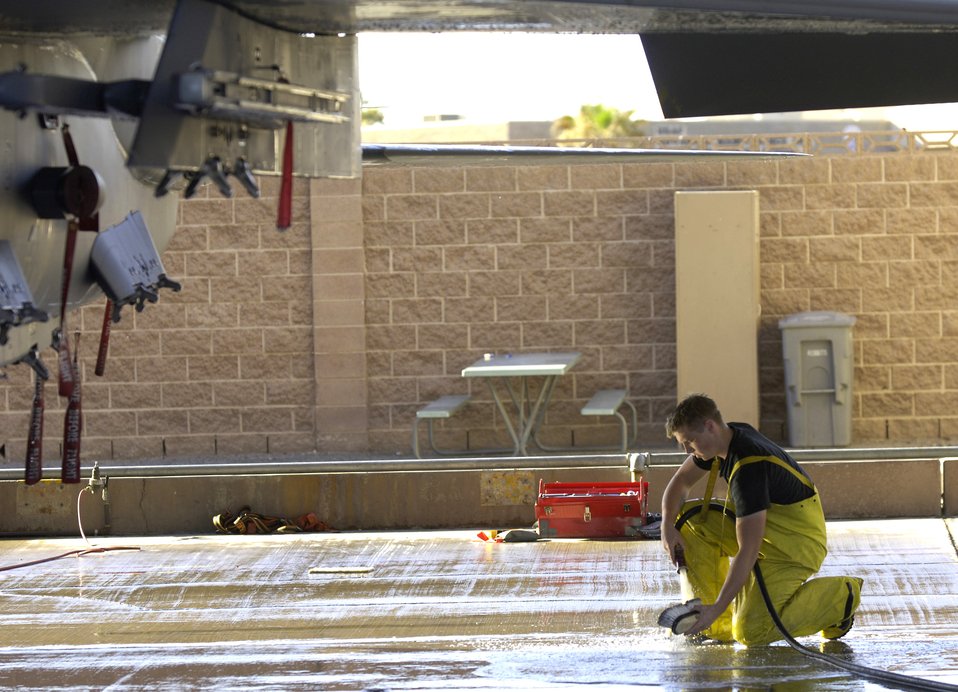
A Strike Eagle gets a bath

Airman 1st Class Dylan Edson rinses his brush while washing an F-15E Strike Eagle during a 120-day periodic cleaning March 15 at Nellis Air Force Base, Nev. The complete F-15 cleaning process takes approximately four hours with a crew of three. Airman Edson is an avionics specialist assigned to the 57th Aircraft Maintenance Squadron at Nellis.